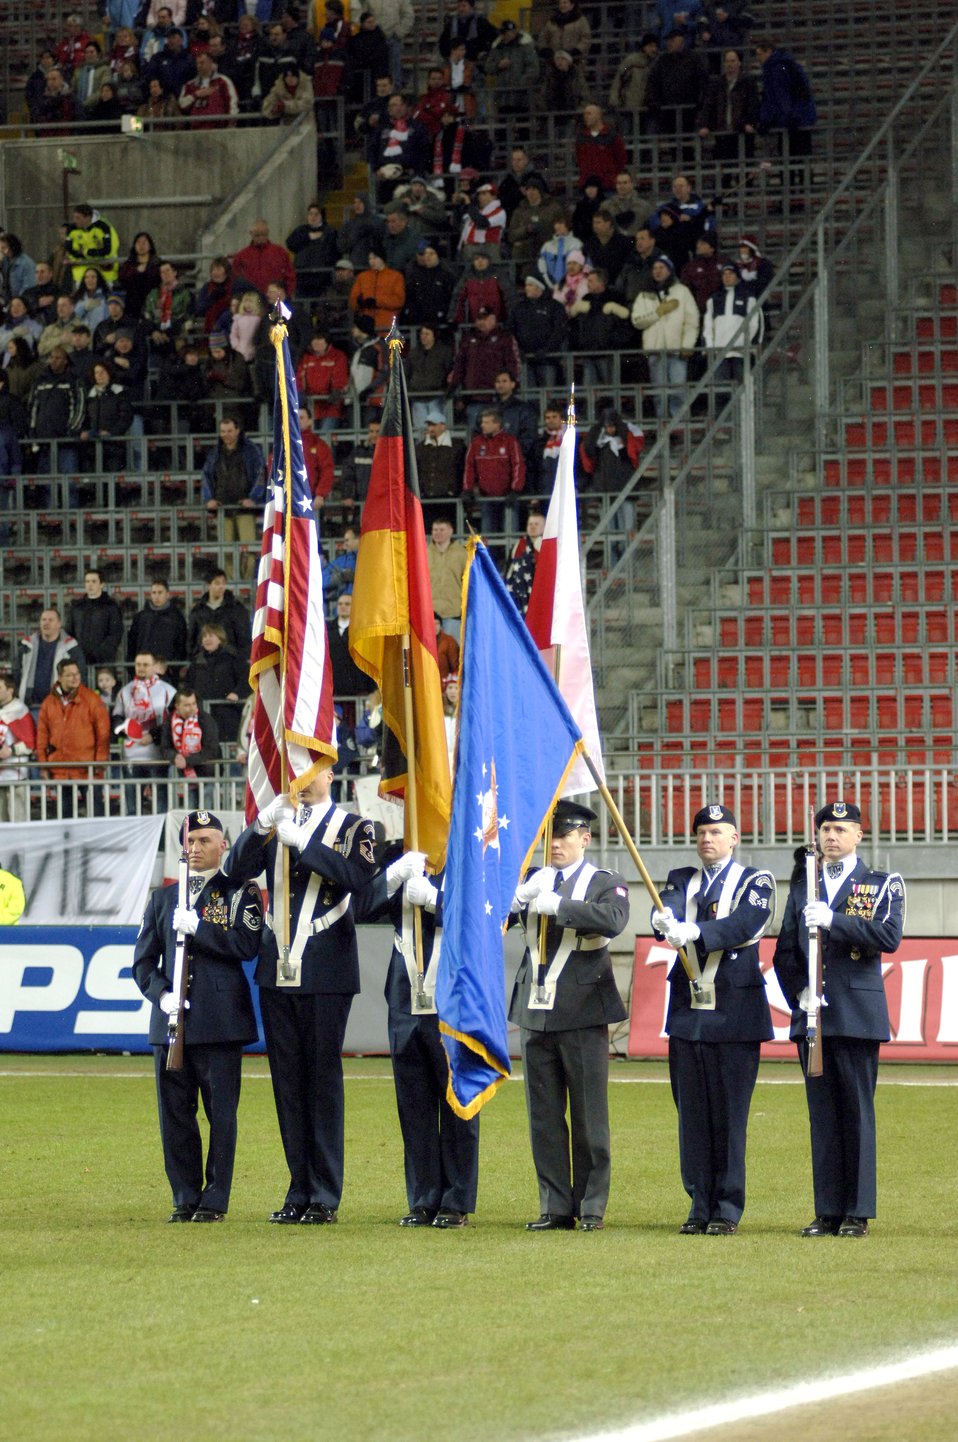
U.S. Men's National Soccer Team match

The U.S. Air Forces in Europe Elite Honor Guard